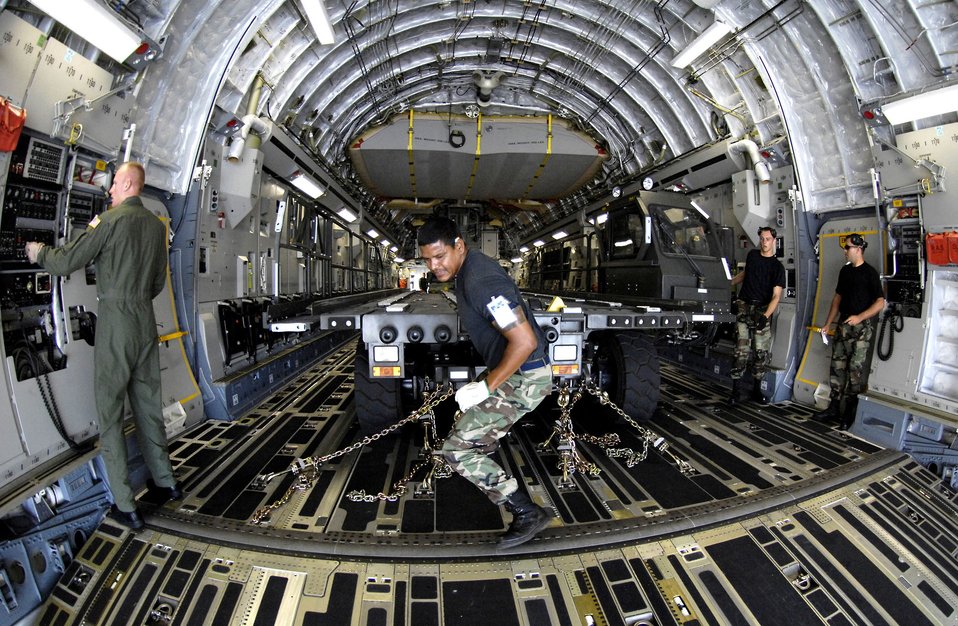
Hickam Rodeo team ready to go

Hickam Air Force Base, Hawaii, Rodeo team members tie down a K-Loader on a C-17 Globemaster III during a rodeo practice July 13. Members from the 535th Airlift Squadron and 15th Logistics Readiness Squadron, Combat Mobility Element are practicing for upcoming Air Mobility Command Rodeo at McChord AFB, Wash.